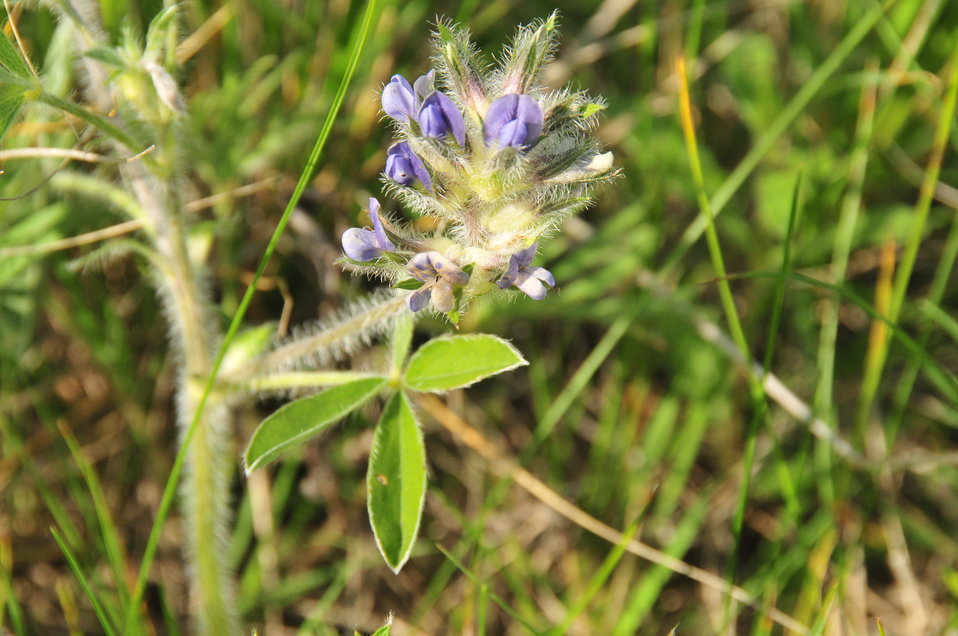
Prairie Turnip (Psoralea esculenta) on Sand Lake WMD 01

Lakota's call the Prairie Turnip 'Timpsula' (Psoralea esculenta). Another common name used is breadroot. It can be found in high quality mixed grass prairies. The starchy tubers of the prairie turnip/breadroot/timpsula were dug up and stored as an important food source. In the Lakota language, the month of June is called tinpsila itkahca wi, meaning the moon when breadroot is ripe.